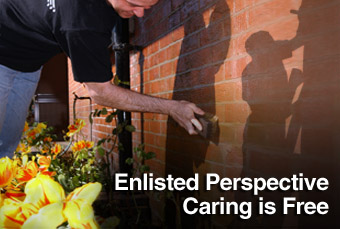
Enlisted Perspective

In the newest